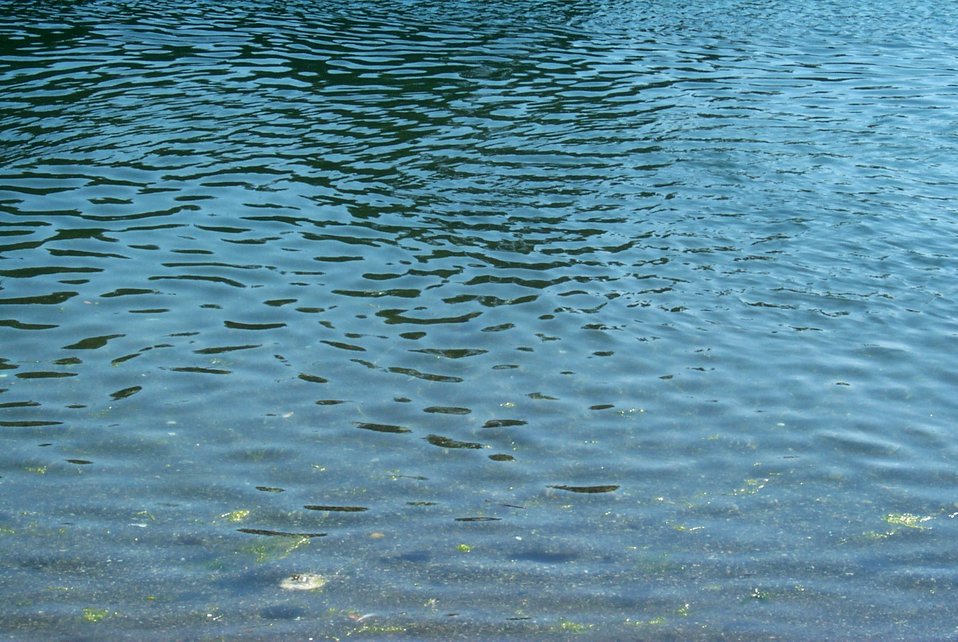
Ripple pattern offshore with green algae drifting close to shore.